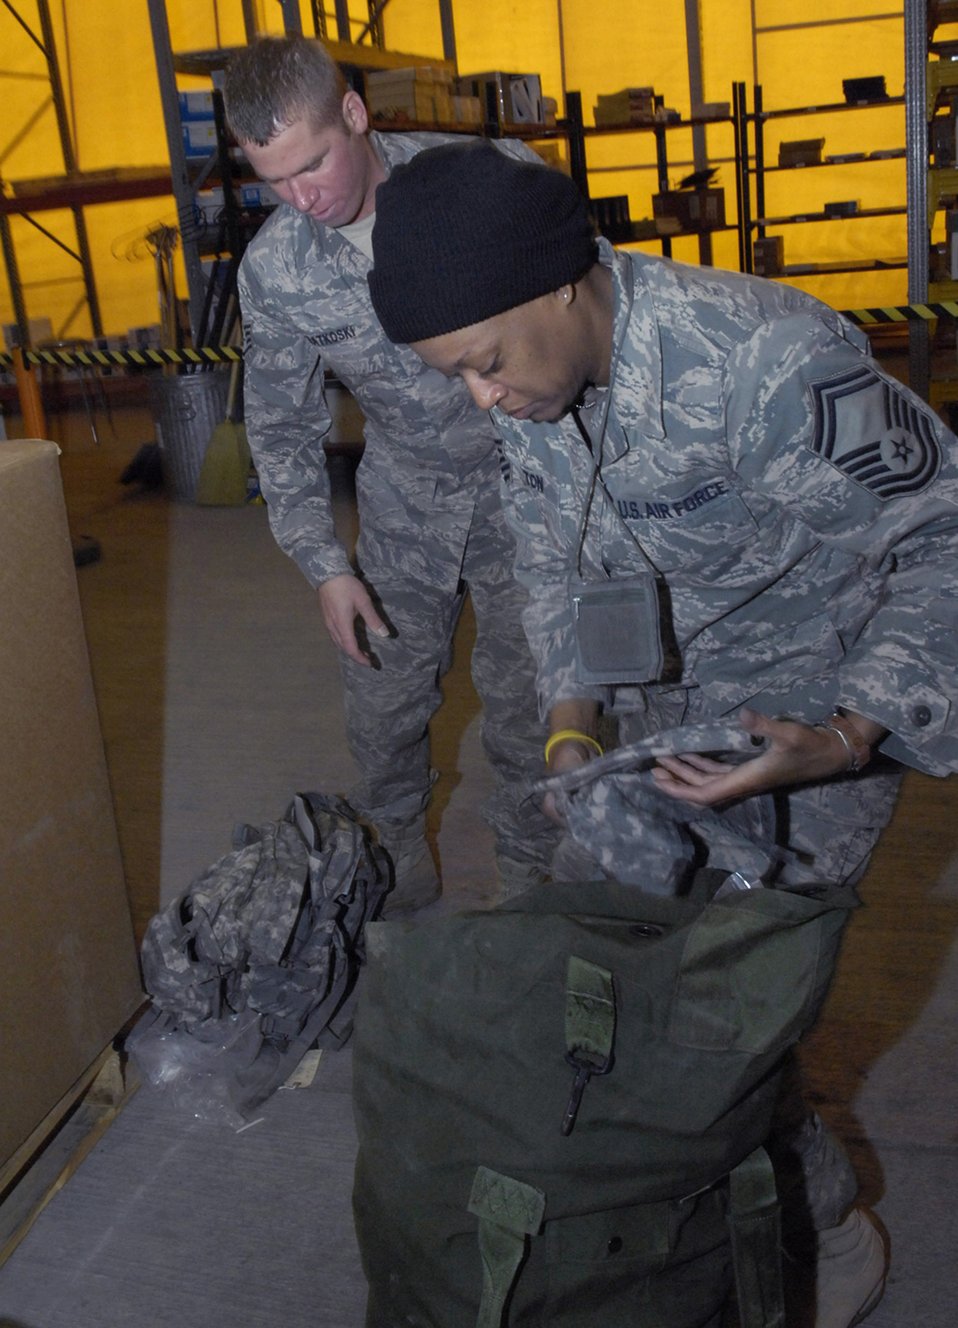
Manas center helps Airmen return home quicker

Senior Master Sgt. Yalonda Milton checks her equipment inventory with Staff Sgt. Michael Katkoski Jan. 19 at the 376th Expeditionary Logistics Readiness Squadron at Manas Air Base, Afghanistan. Sergeant Milton is redeploying back to Scott Air Force Base, Ill., after a six-month deployment in Afghanistan.